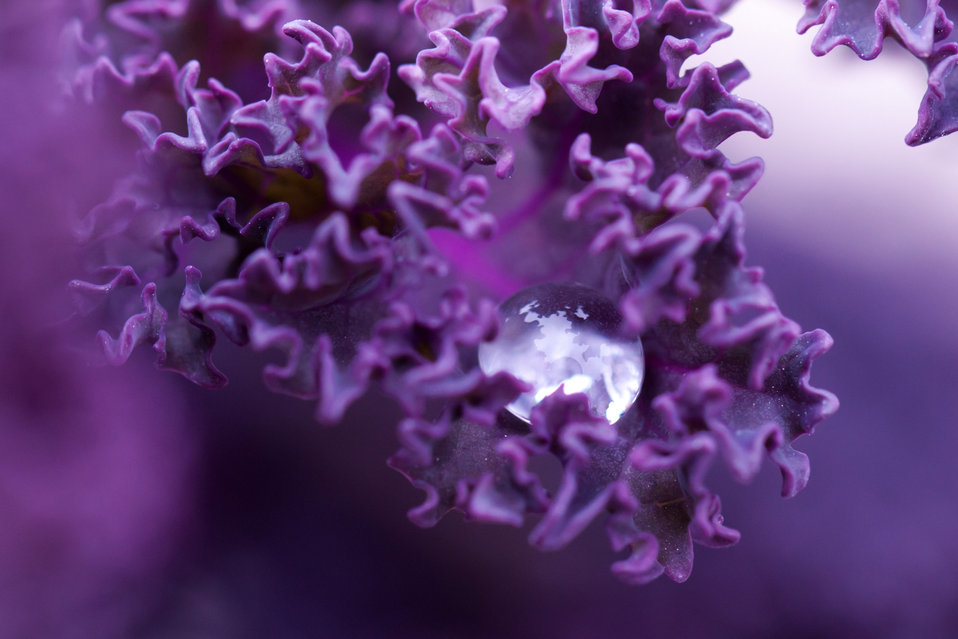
Water drop on a leaf

A single water drop on a purple leaf.